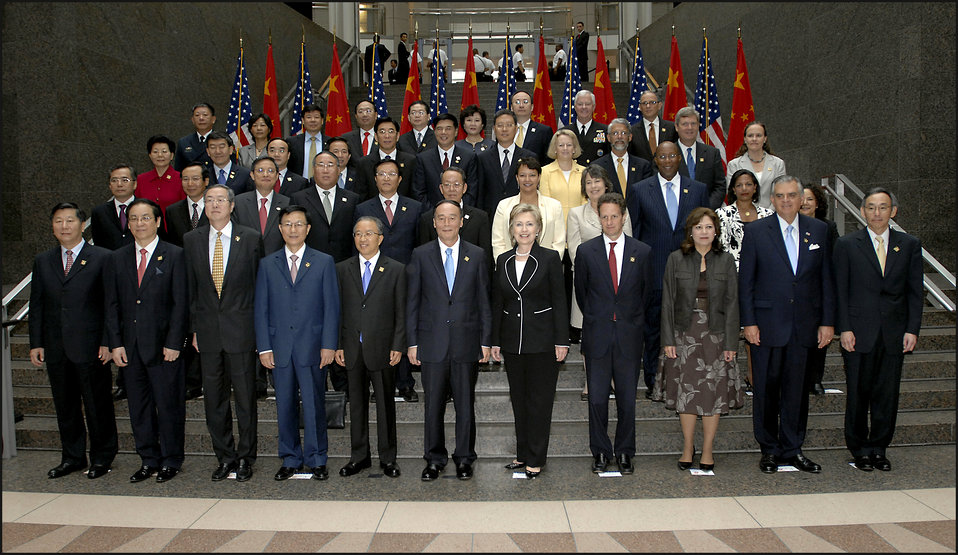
SandED: July 27-28, 2009

Leaders of the first U.S.-China Strategic and Economic Dialogue